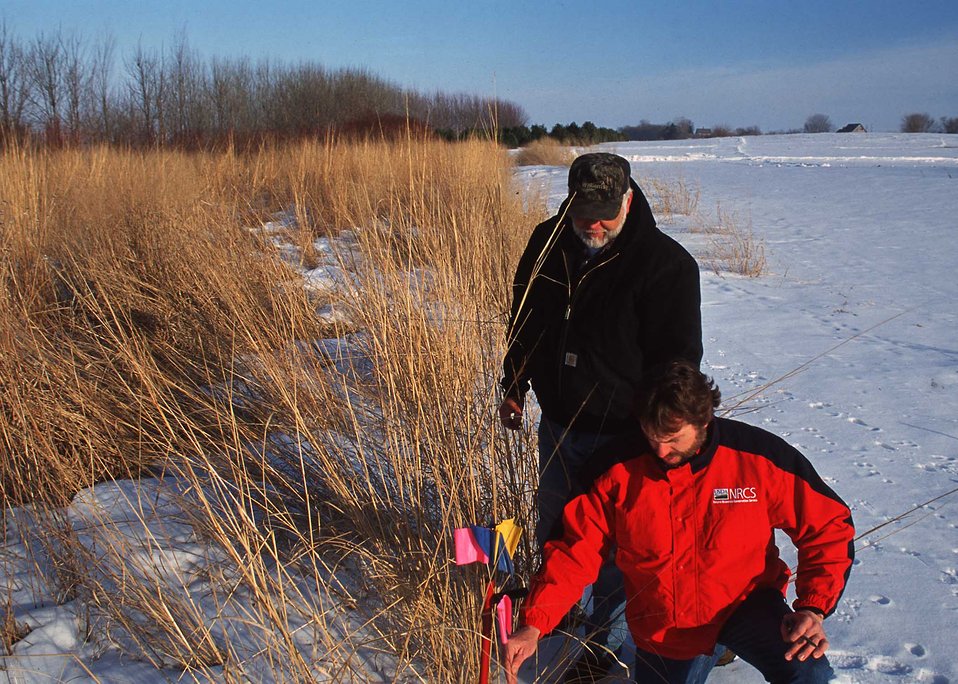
Native grasses are part of a buffer system along Bear Creek in Story County in central Iowa. They aid wildlife and the environment.